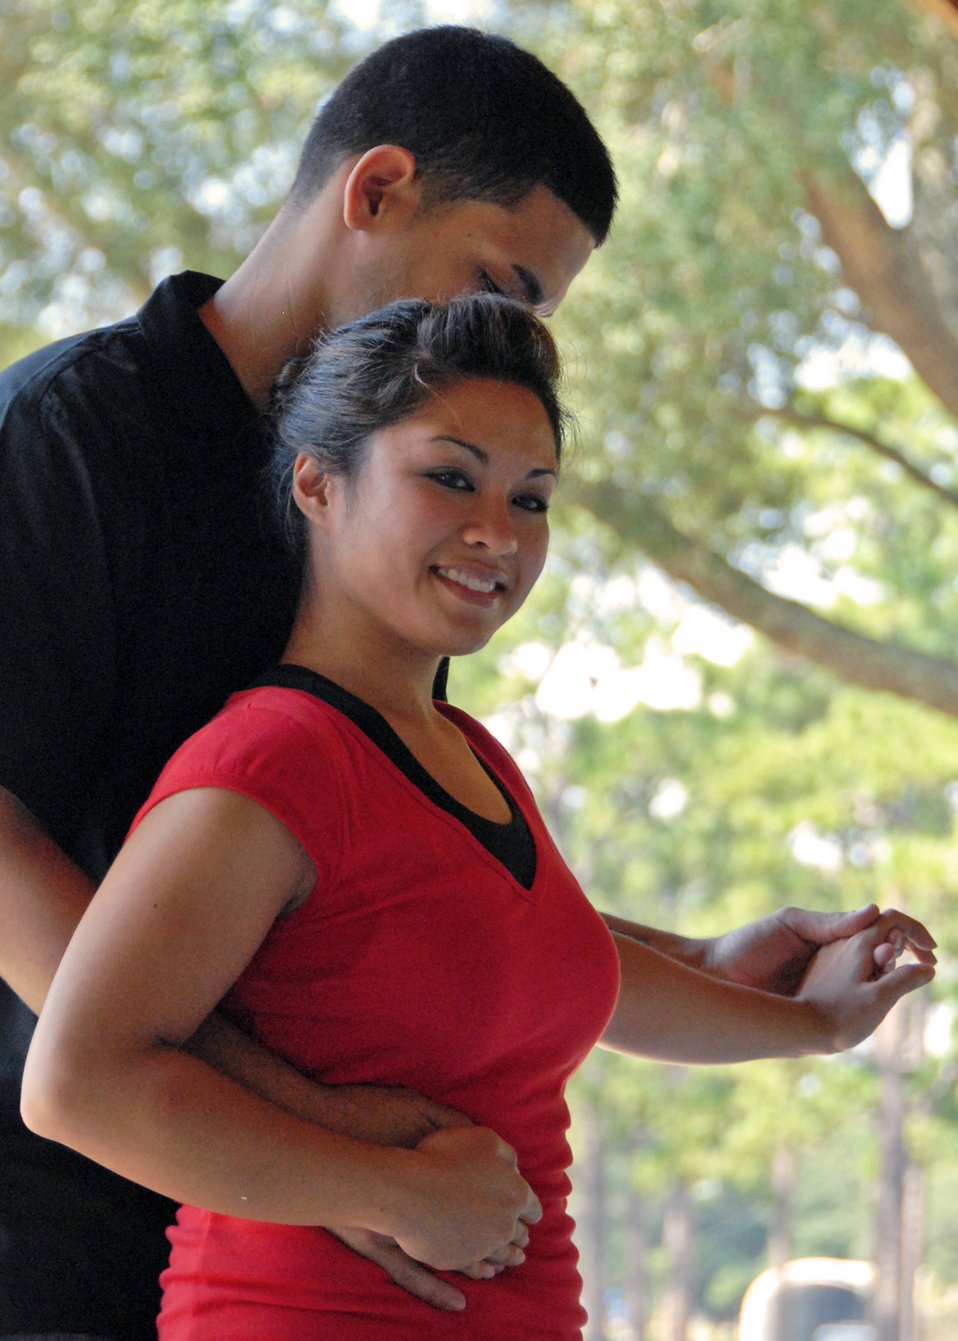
Hispanic Heritage Month kicks off

1st Lt. Rhoda Lazo and James Burgos perform in the group